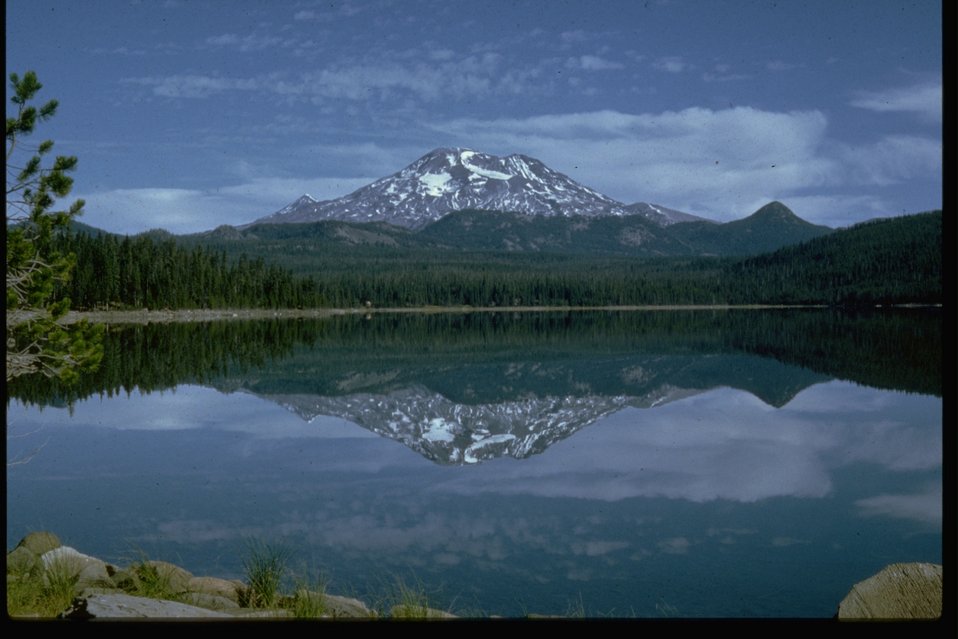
Scenic view of Sparks Lake with Mount Bachelor in the background.